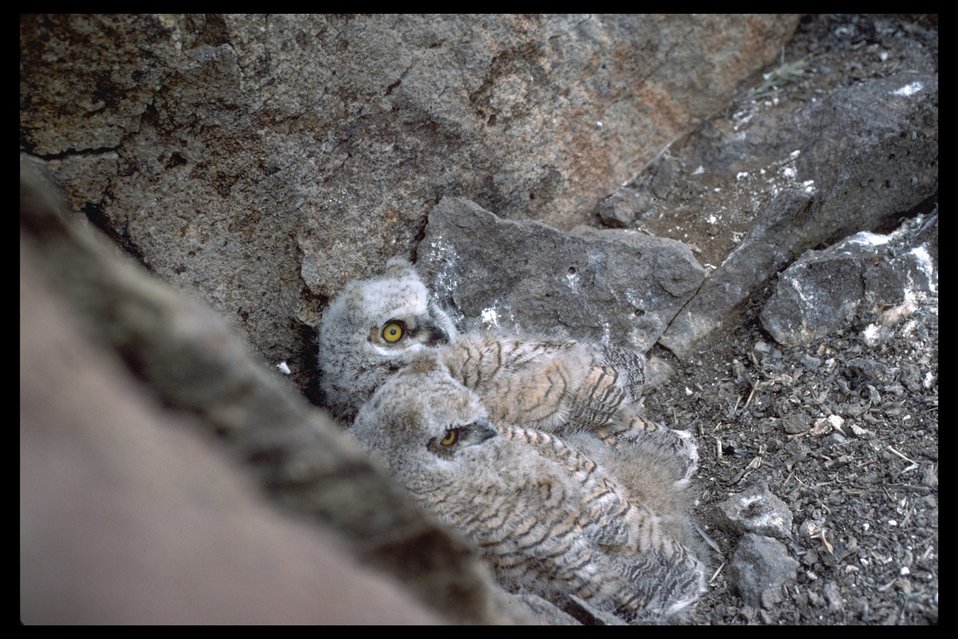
Two Great Horned owls pearched on rim rock in the Blitzen River WSA. (286-E)